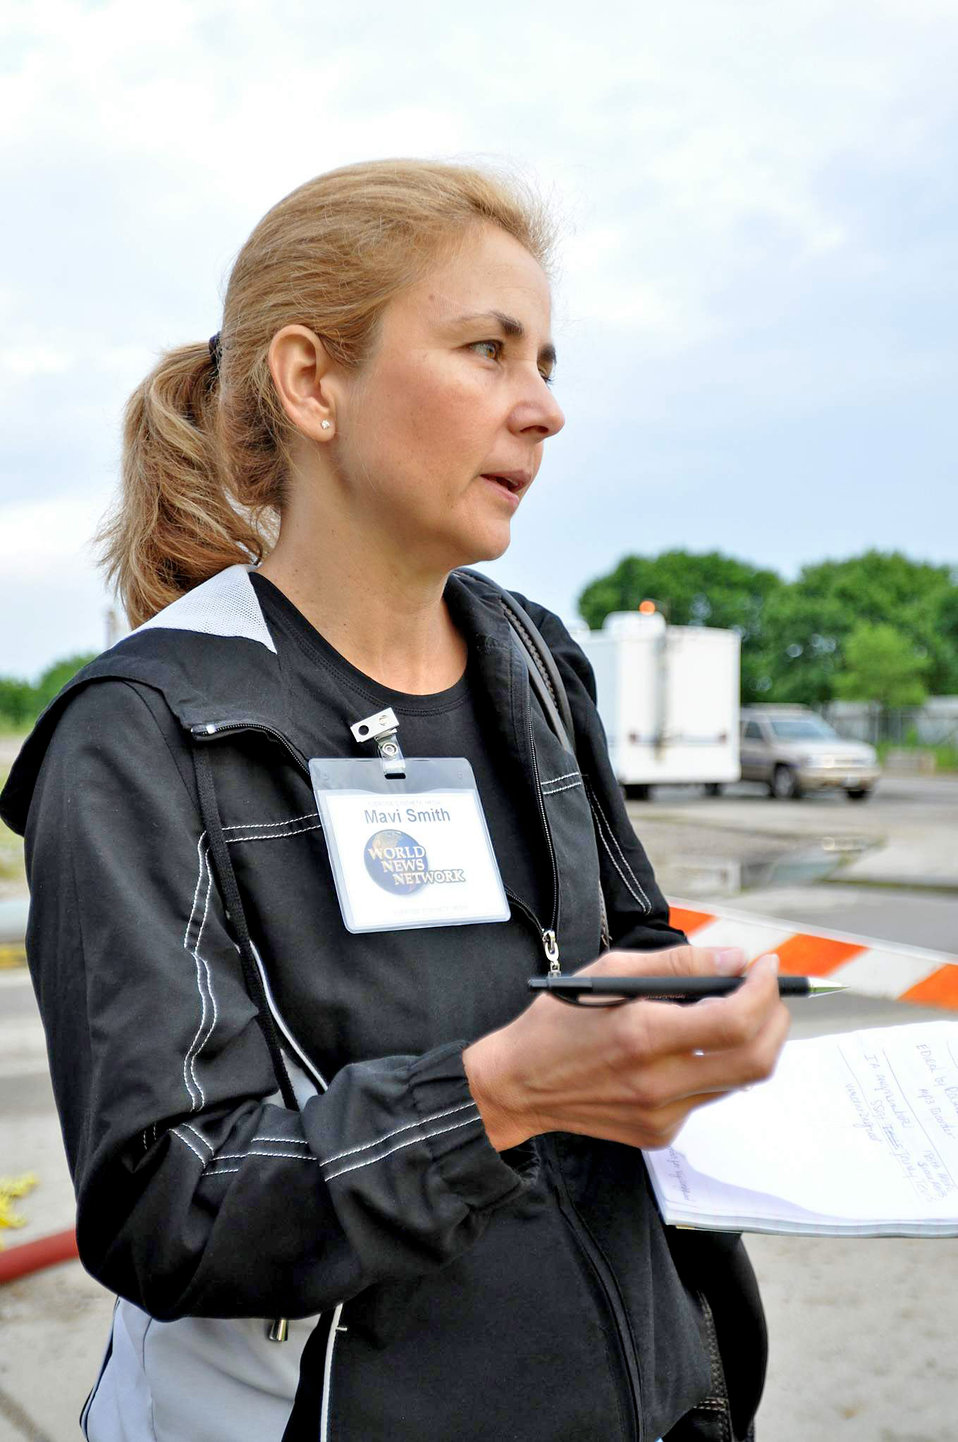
Role-playing Airmen put Vigilant Guard, disaster responders on the record

Master Sgt. Mavi Smith interviews a guardsman as a mock reporter during a simulated disaster exercise taking place in Des Moines, Iowa, as part of Vigilant Guard. Sergeant Smith was working with several other fictional reporters there to test the responders' abilities to work with civilian agencies during a disaster. Sergeant Smith is from the Air National Guard Training and Education Center in Tennessee.